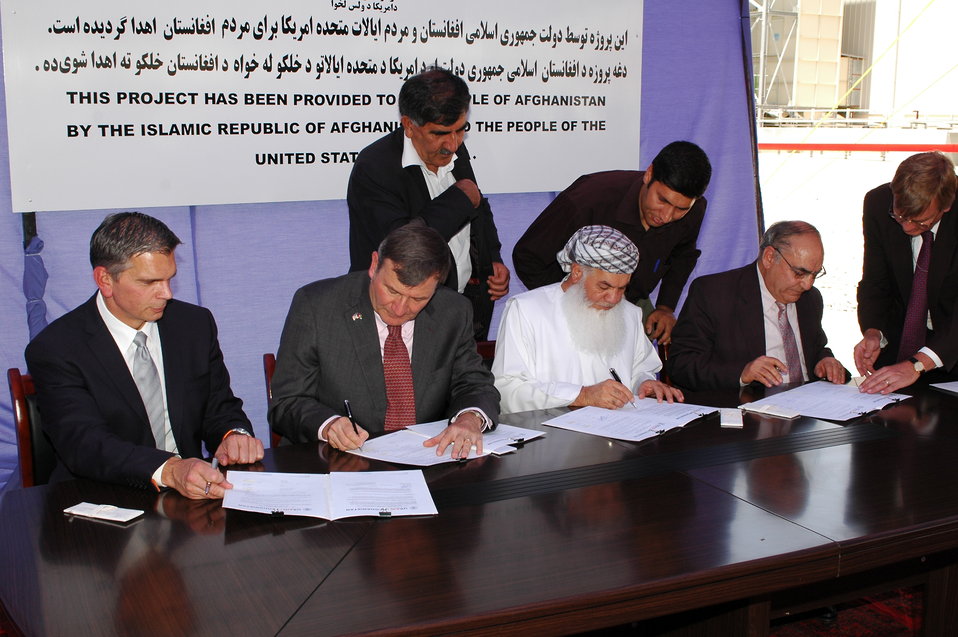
105 MW Tarakhil Power Plant Handover